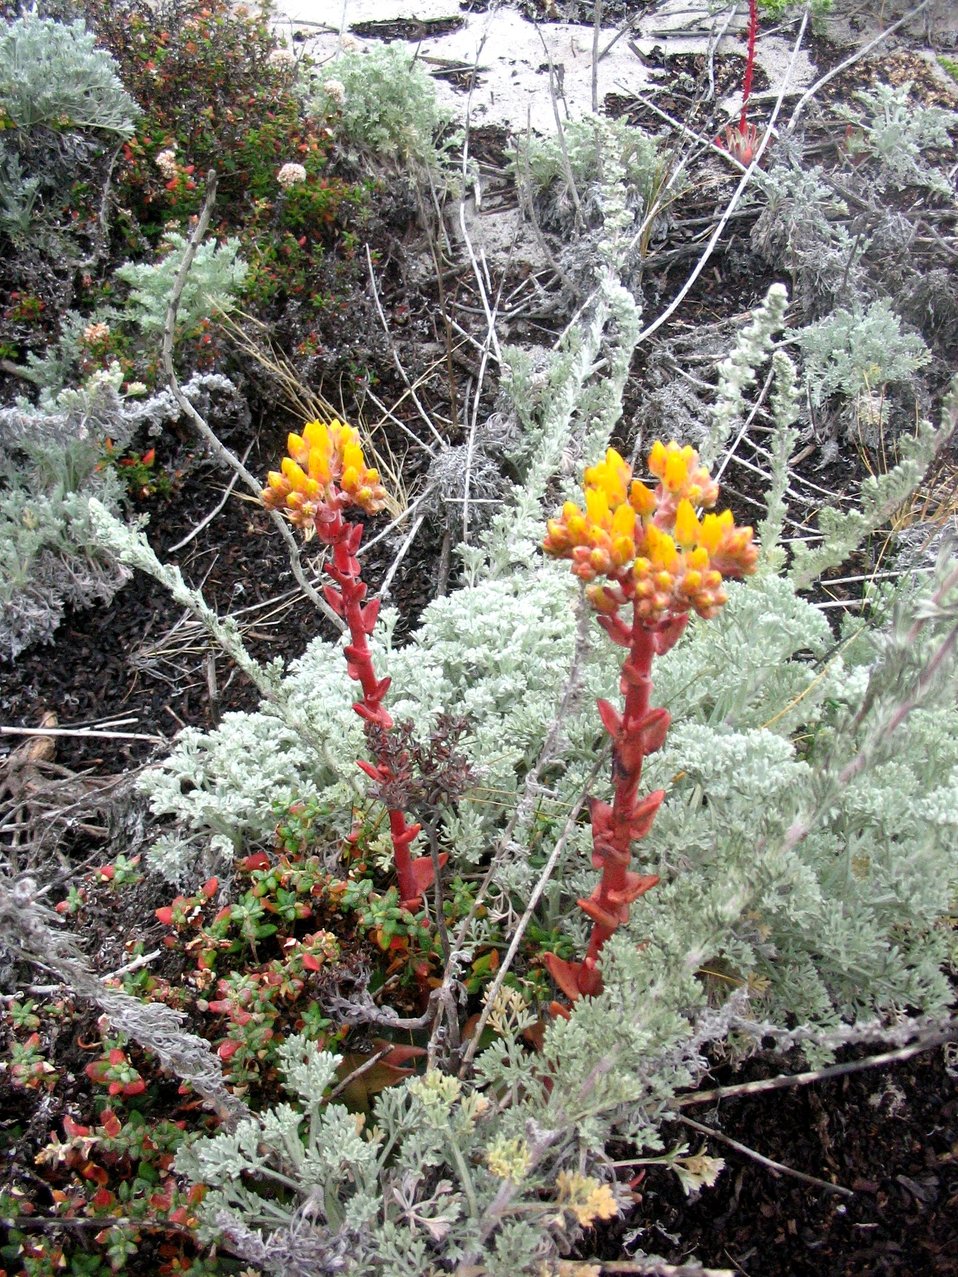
Stonecrop (Sedum sp.)